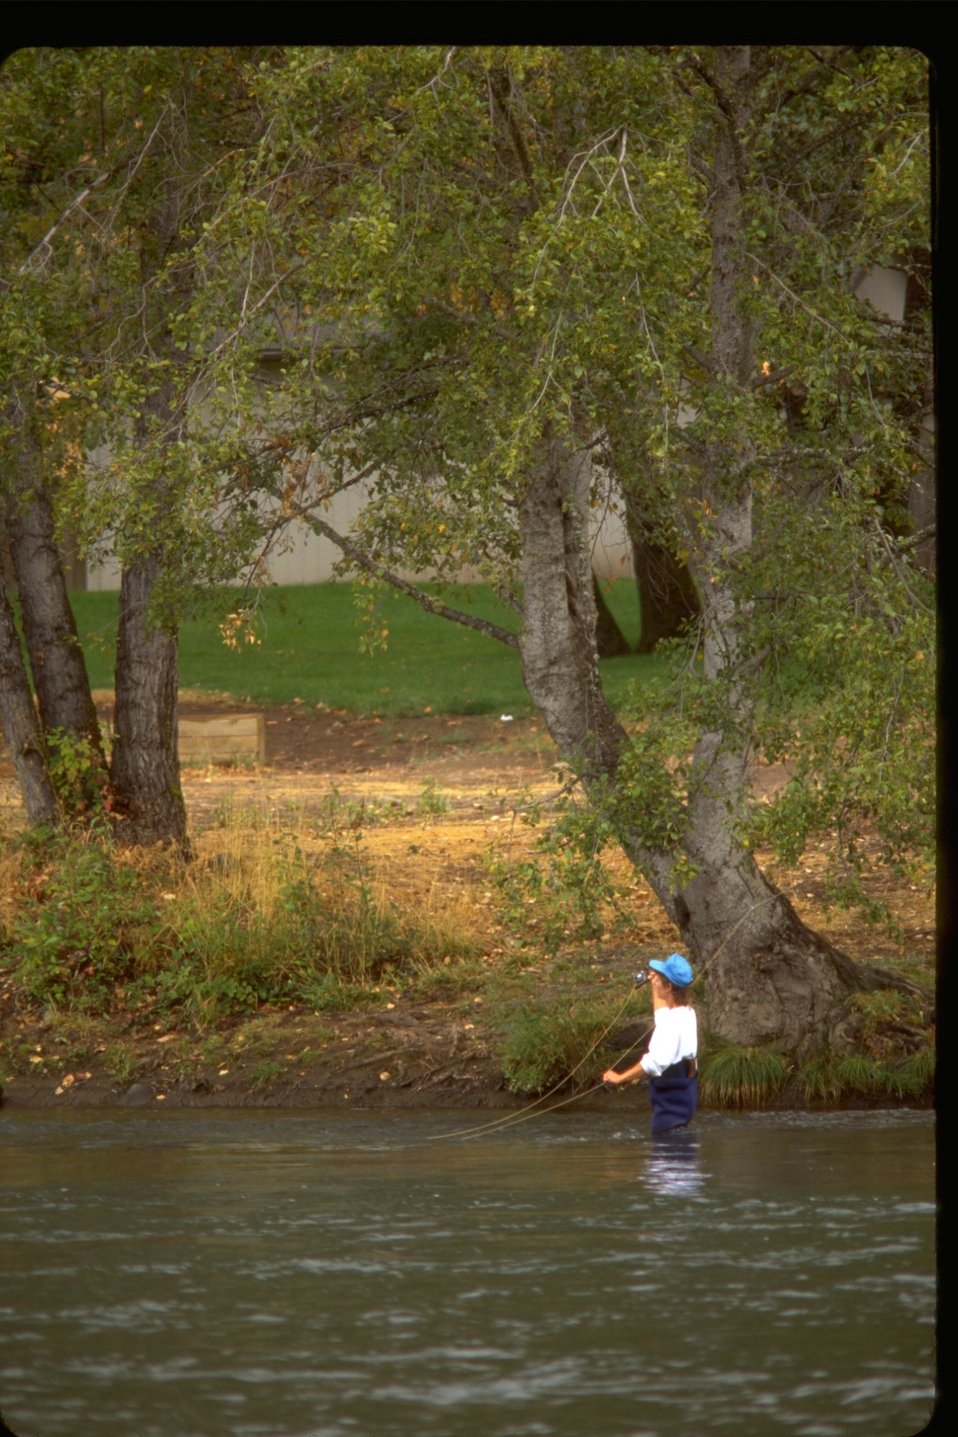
Flyfishing on the Rogue River.